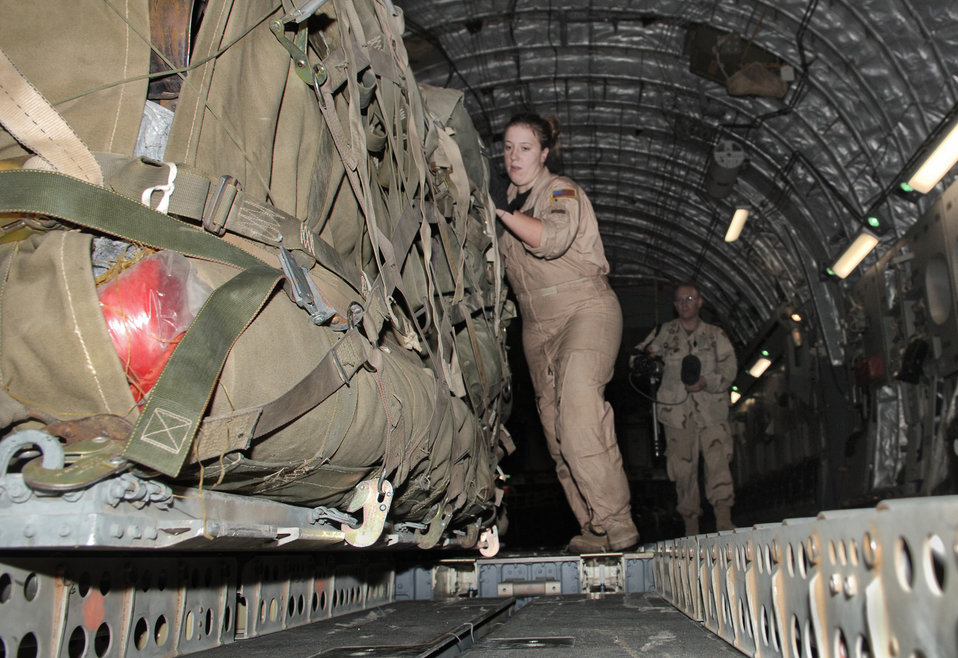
Airmen deliver first relief supplies to Pakistan

ISLAMABAD, Pakistan -- Airman 1st Class Marie Gamachie, a C-17 Globemaster III loadmaster, unloads a pallet of the first relief supplies from the United States here Oct. 9 less than 48 hours after the devastating earthquake that left thousands dead and thousands more injured. The cargo comprised 12 pallets of food, water, medicine and blankets and weighed almost 90,000 pounds. Two aerial port specialists from the 455th Expeditionary Logistics Readiness Squadron at Bagram Air Base, Afghanistan, were also on the flight to coordinate and manage cargo. The C-17 and its crew are from the 7th Airlift Squadron at McChord Air Force Base, Wash.